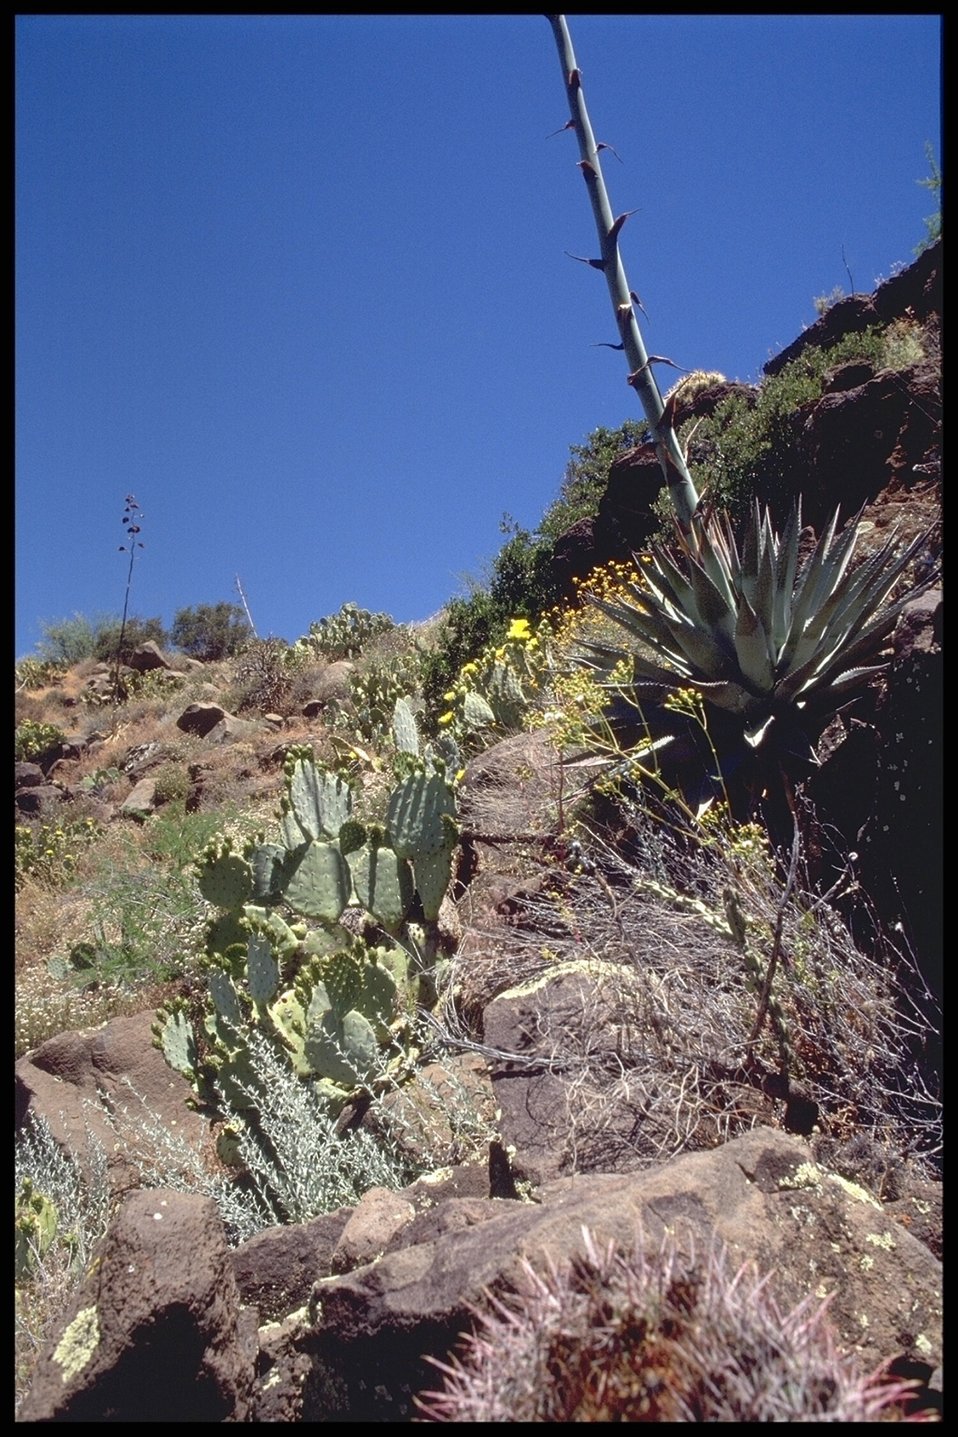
President Bill Clinton designated the Agua Fria National Monument in January of the year 2000.